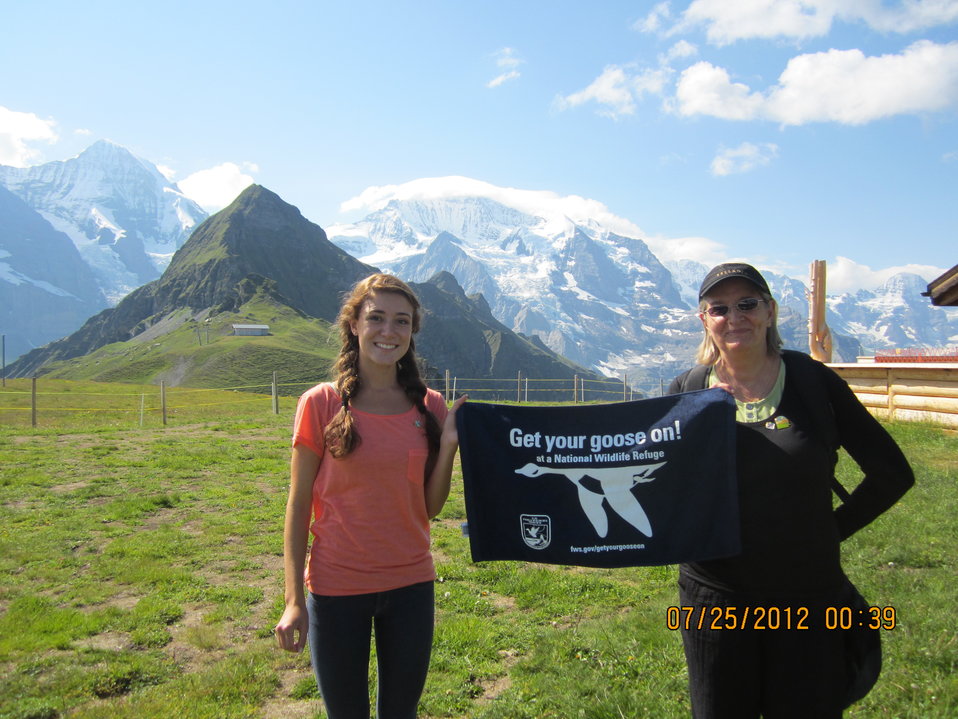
Get Your Goose On! - Swiss Alps Style